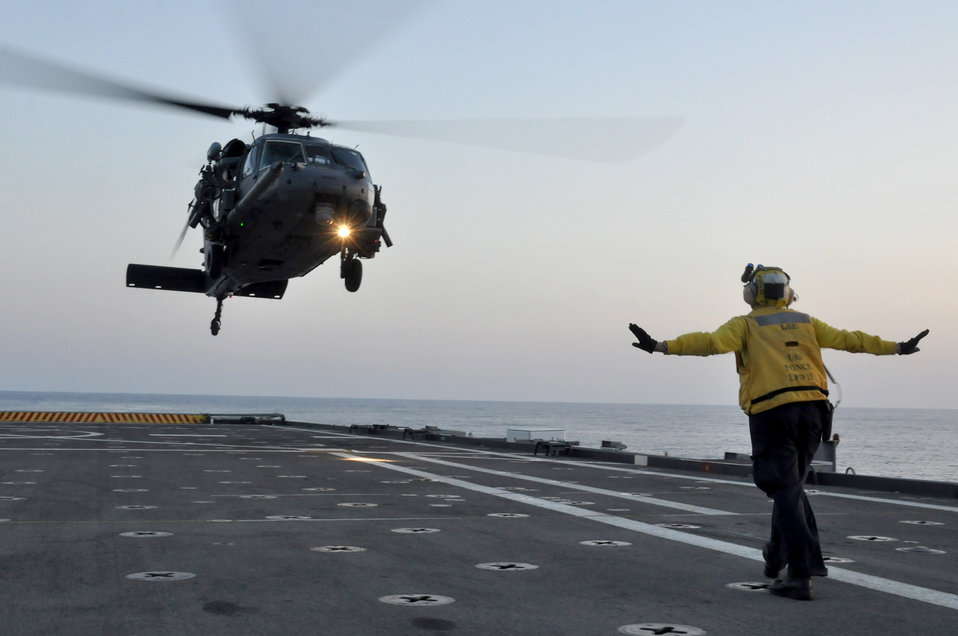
56th Rescue Squadron Flight Ops

110325-N-7293M-391 MEDITERRANEAN SEA (Mar. 25, 2011) Aviation Boatswain?s Mate (Handler) 2nd Class Matthew Kolb directs a U.S. Air Force HH-60G Pave Hawk from the 56th Rescue Squadron as it prepares to land aboard amphibious transport dock USS Ponce (LPD 15) during evening training operations. Elements of the 56th Rescue Squadron, which is based out of RAF Lakenheath, England, embarked aboard Ponce to provide search and rescue coverage for pilots enforcing the no-fly zone over Libya. Ponce is part of Kearsarge Amphibious Ready Group, supporting maritime security operations and theater security cooperation efforts in the U.S. 6th Fleet area of responsibility.